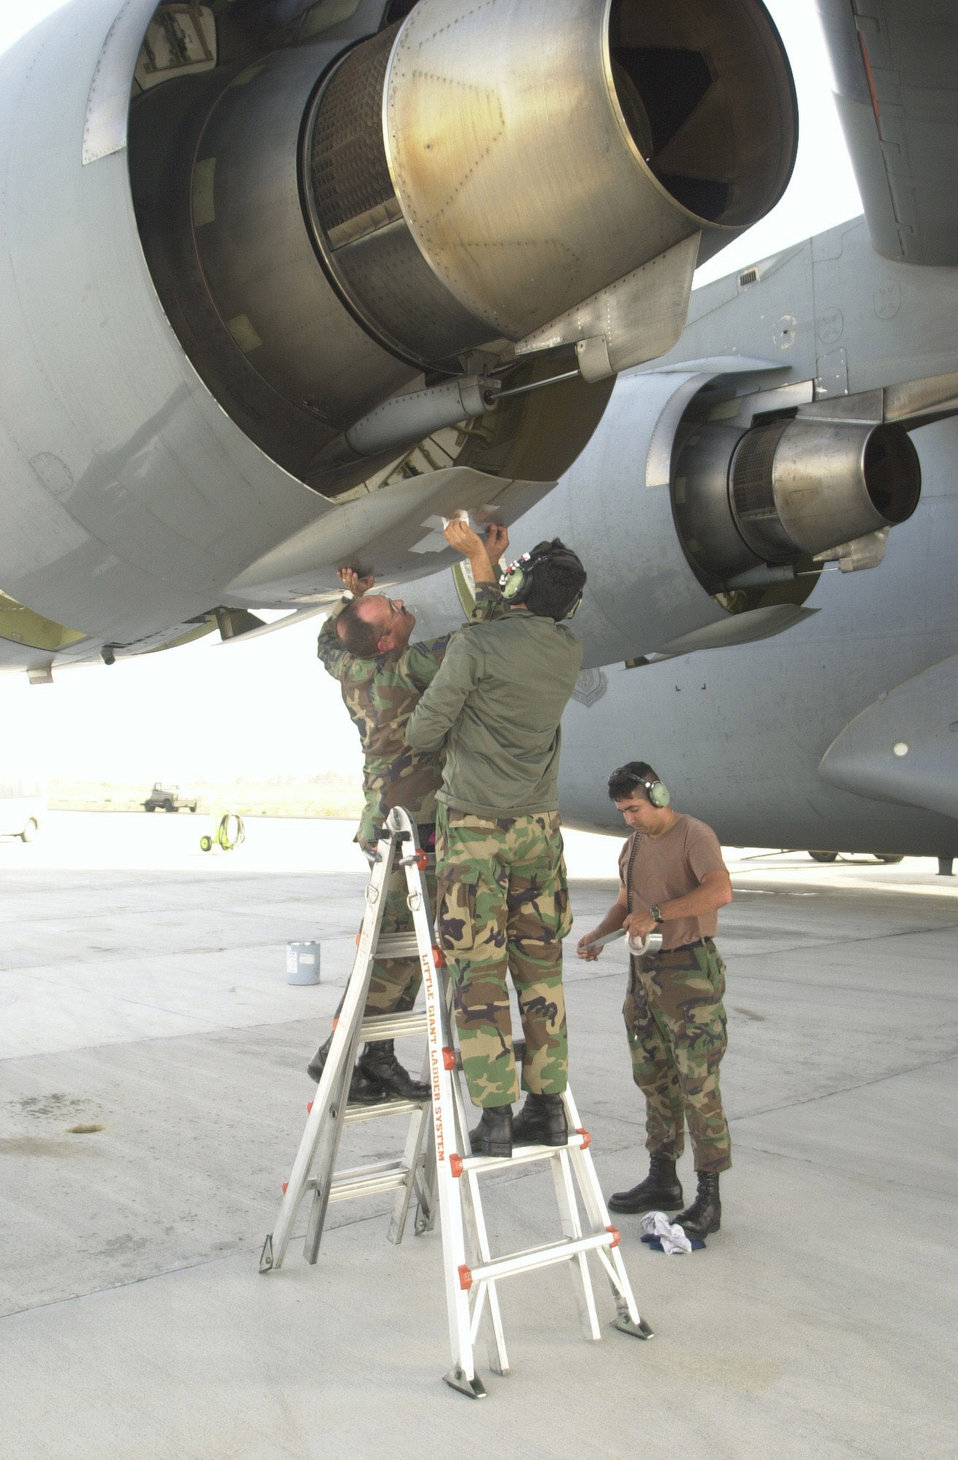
Patch

OPERATION ENDURING FREEDOM -– Senior Master Sgt. Robert Baldwin from the 437th Aircraft Generation Squadron, Master Sgt. Freddie Garcia from the 315th AGS, and Tech. Sgt. Reinaldo Rodriguez of the 437th Maintenance Squadron all at Charleston Air Force Base, S.C., make a temporary patch on a C-17A Globemaster III prior to a mission at an operating location in support of the U.S. Central Command execution of Operation Enduring Freedom. Three C-17s flew missions on Nov. 15; one dropped 17,000 humanitarian daily rations and the other two airdropped containers of blankets and wheat.